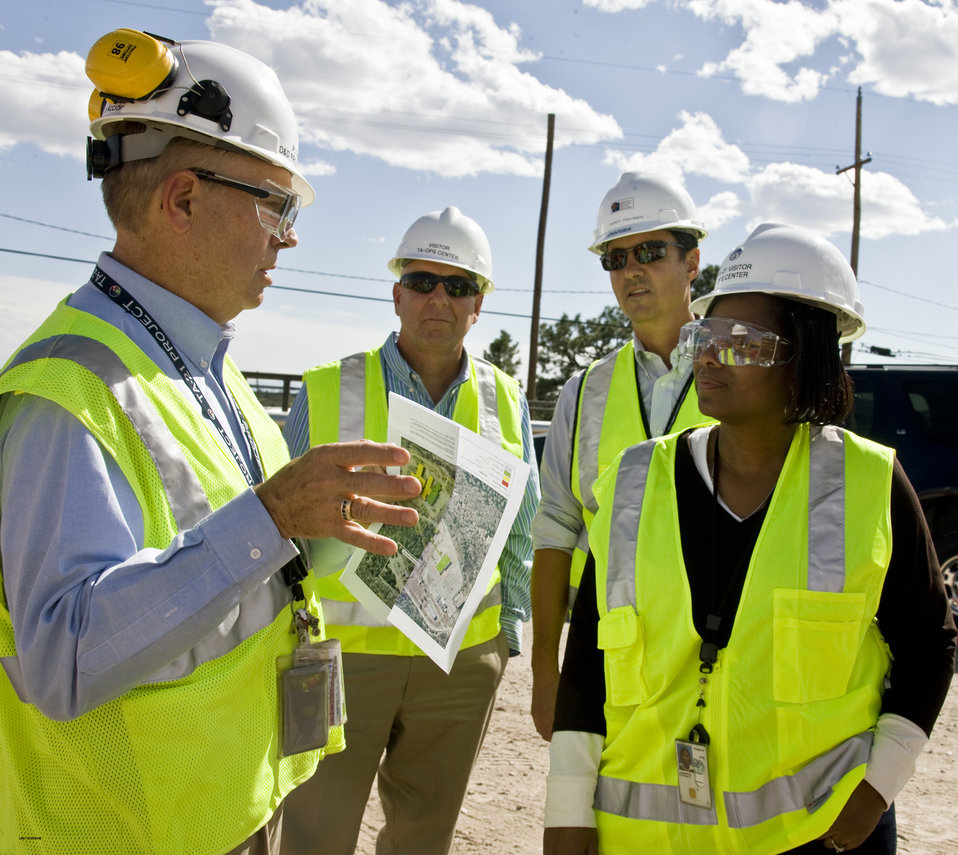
Los Alamos Site Visit

Allan Chaloupka, left, program director of decontamination and decommissioning at LANL’s Technical Area 21, briefs EM Recovery Act Program Director Cynthia Anderson, far right, on the significant progress of the Recovery Act-funded cleanup at LANL. Everett Trollinger, National Nuclear Science Administration's Recovery Act Projects Team lead at Los Alamos, second from right, and EM Recovery Act Program Manager John Mocknick, second from left, joined Anderson on a tour of the cleanup project.